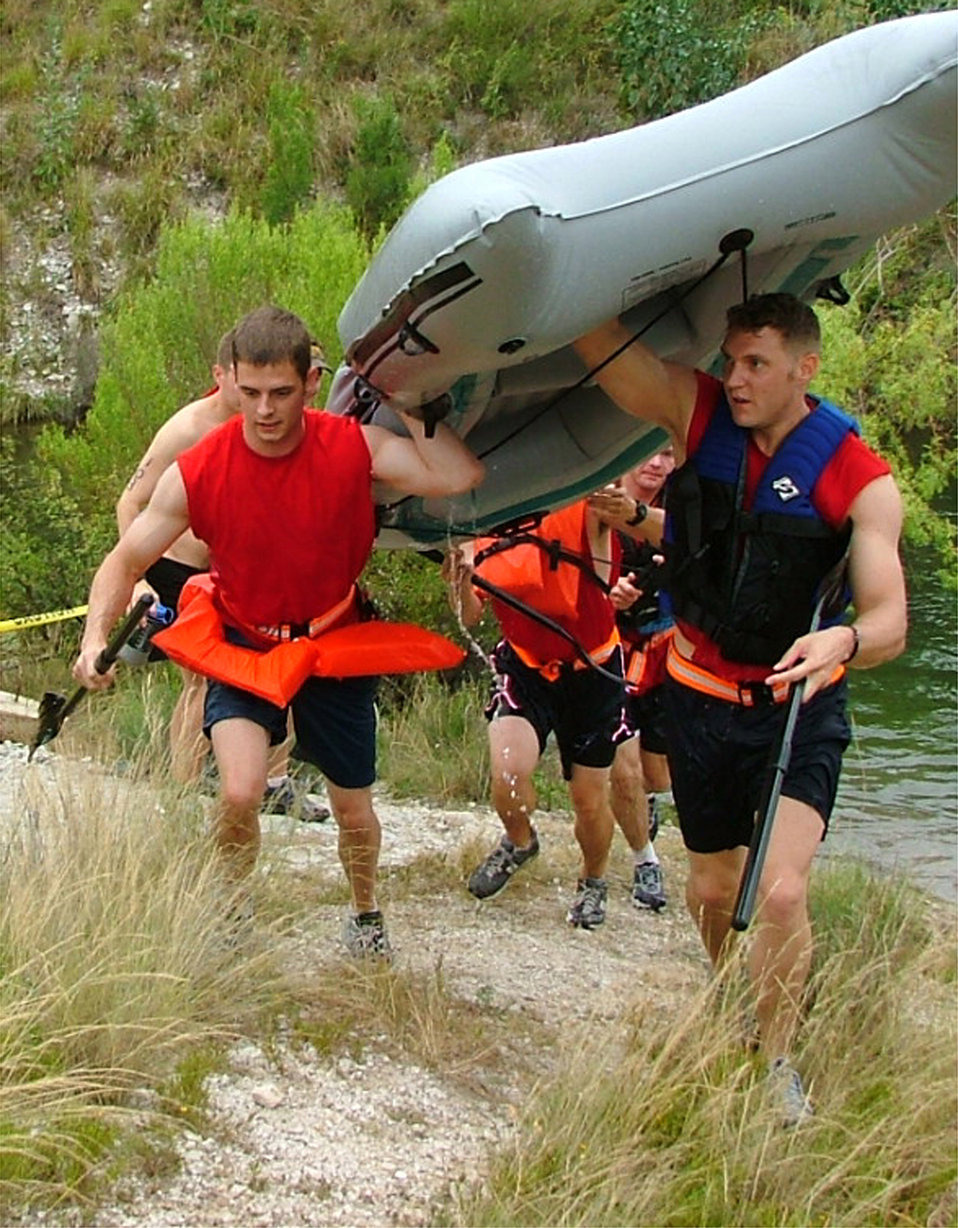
Race to the finish

LAUGHLIN AIR FORCE BASE, Texas -- Second Lt. James Lee (left) and Capt. Nate Day lead their team to the finish line after the rafting portion of an adventure race June 12. More than 100 Airmen from the 86th Flying Training Squadron took part in the unit-sponsored race that included a 22-mile bike ride, a 6-mile run and a four-man rafting event.